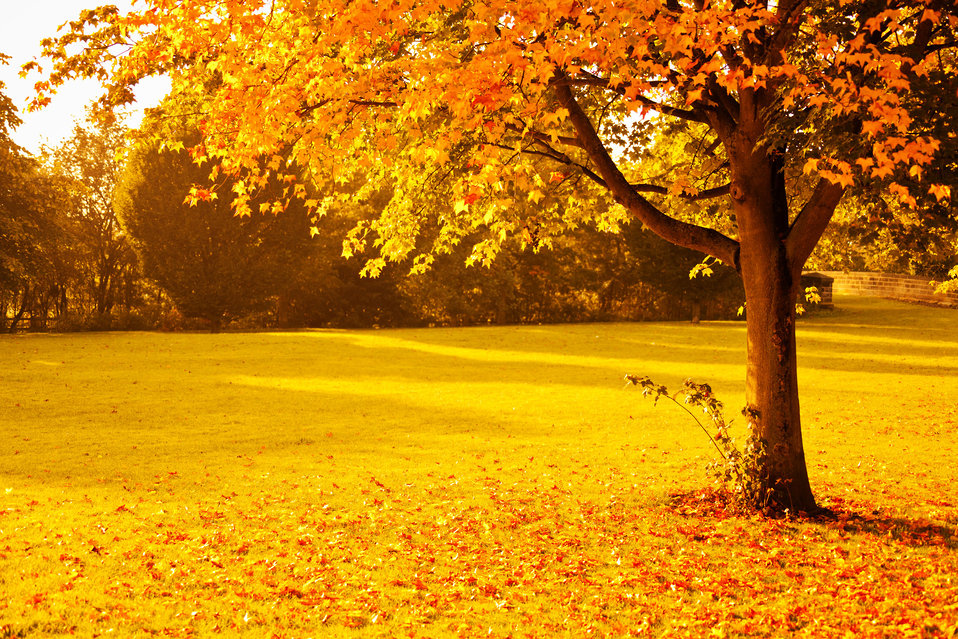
Yellow autumn

A tree in park in autumn at sunset.